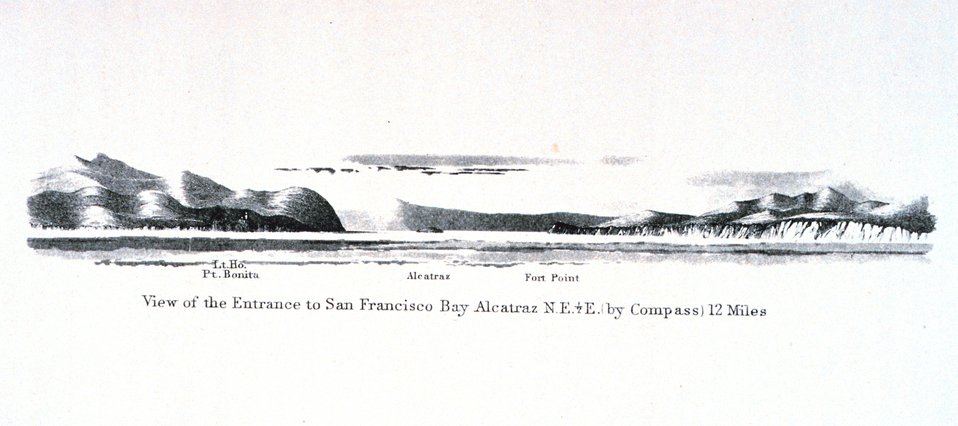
The entrance to San Francisco Bay with Alcatraz Island seen in the center of the image. In: Pacific Coast. Coast Pilot of California, Oregon, and Washington Territory . By George Davidson, 1869. P. 67. Library Call Number VK947.D4 1869.